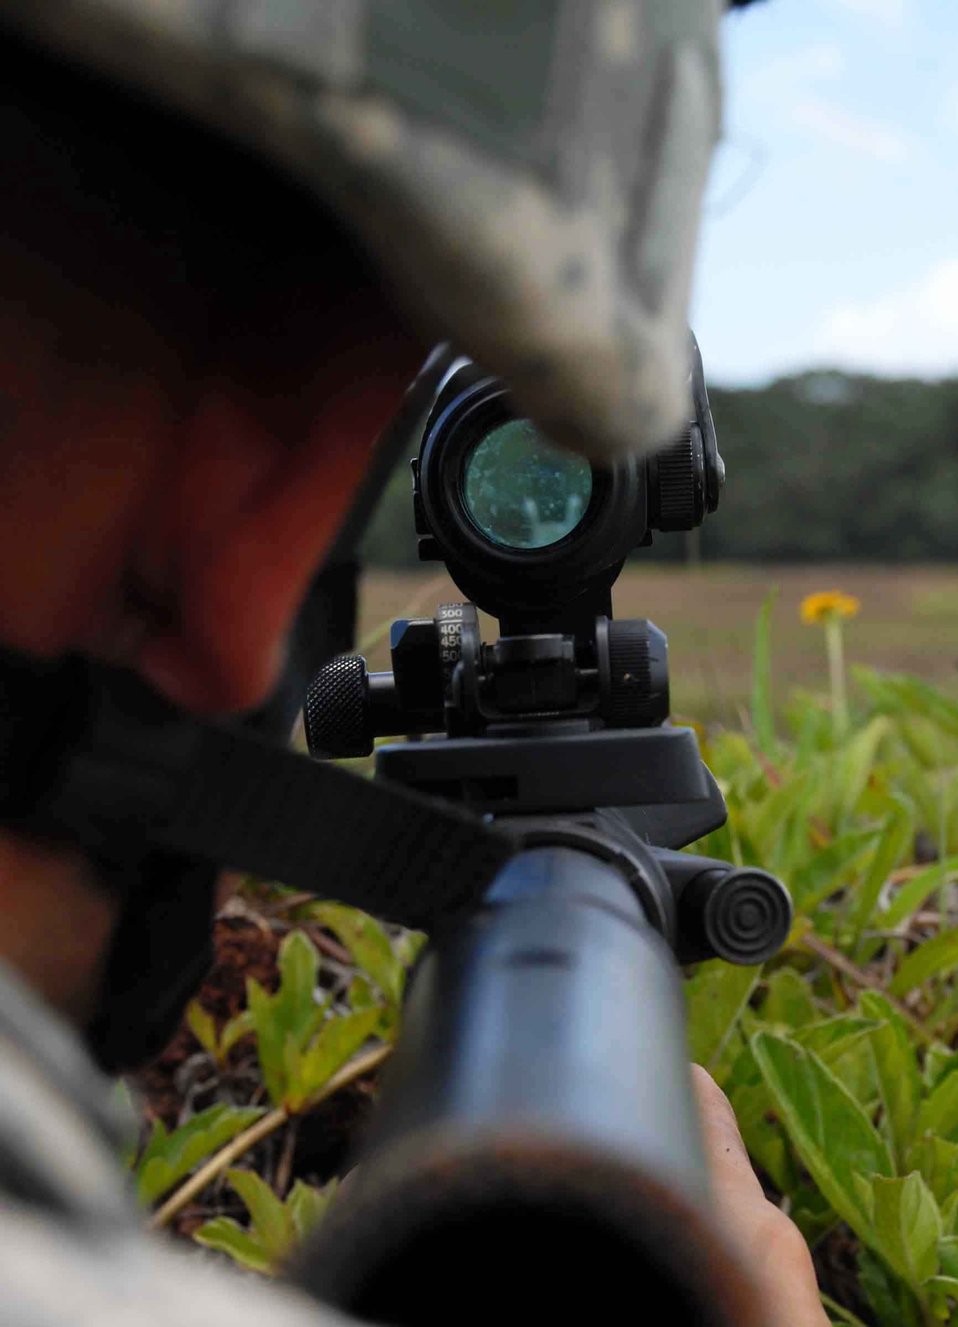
Airmen train with Army to become JTACs

Airman 1st Class Doug Fraites, 25th Air Support Operations Squadron ground radio maintenance, secures a perimeter for a landing zone at Wheeler Army Airfield's East Range near Hickam Air Force Base, Hawaii, June 24. Training included combat lifesaver skills, convoys, air assault egression and improvised explosive device reaction and will give tactical air control party members a better idea of what to expect when they deploy to Afghanistan with an Army unit.